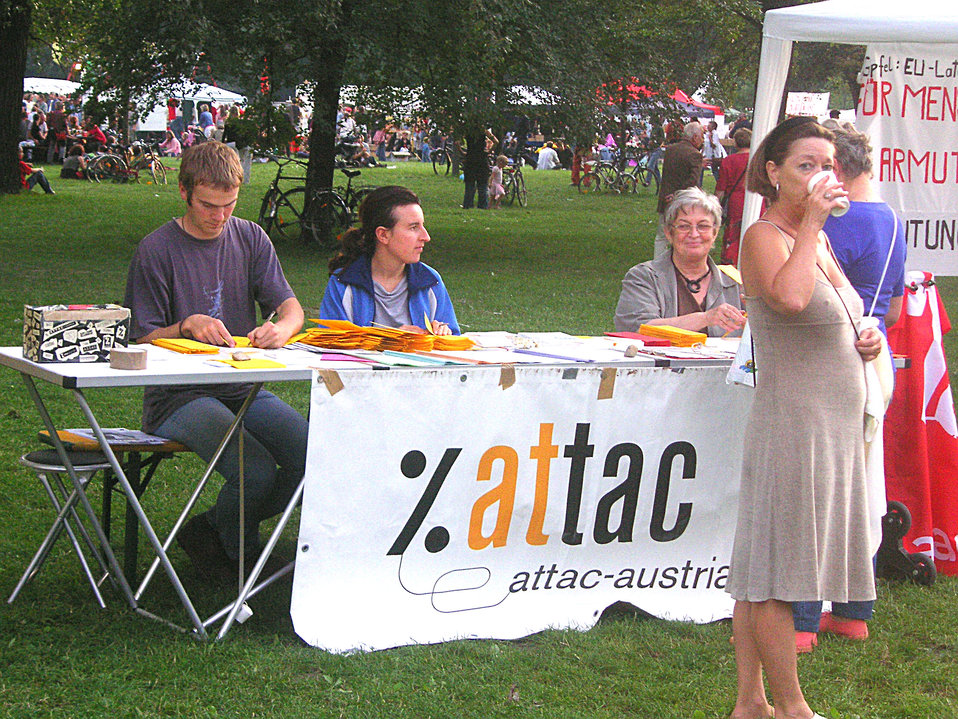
An en:ATTAC stall at the Volksstimmefest, en:Vienna, en:Austria, September 4, 2005. The Volksstimmefest is an annual two-day event organized by the en:Communist Party of Austria at the Jesuitenwiese, Prater, en:Leopoldstadt. It takes place on the first weekend in September.